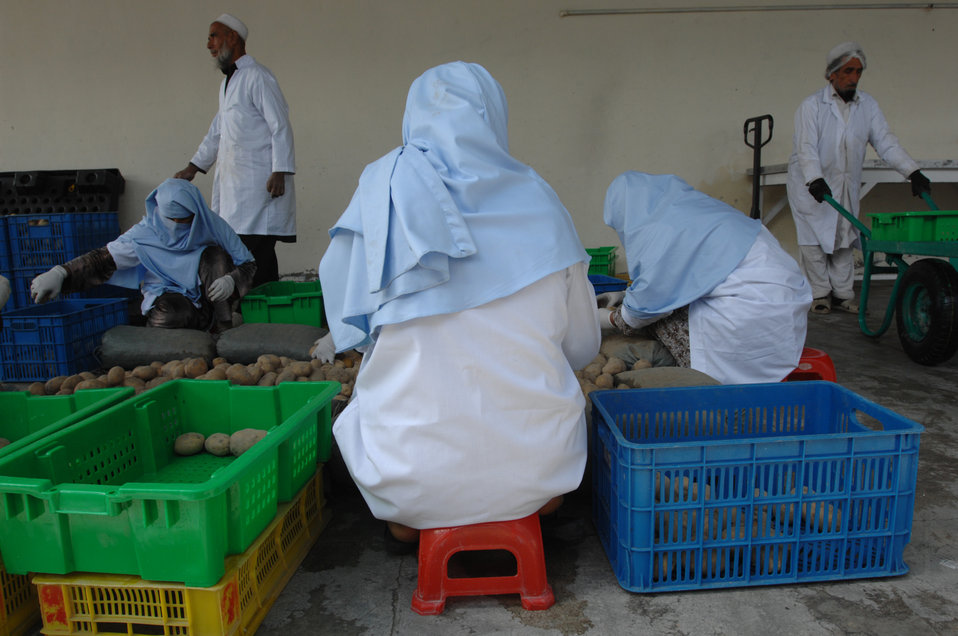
110209sv Shah173

Women sort and grade potatoes at the Surkh Rod vegetable packing facility in Nangarhar province on Wednesday, February 9, 2011. (S.K. Vemmer/Department of State)